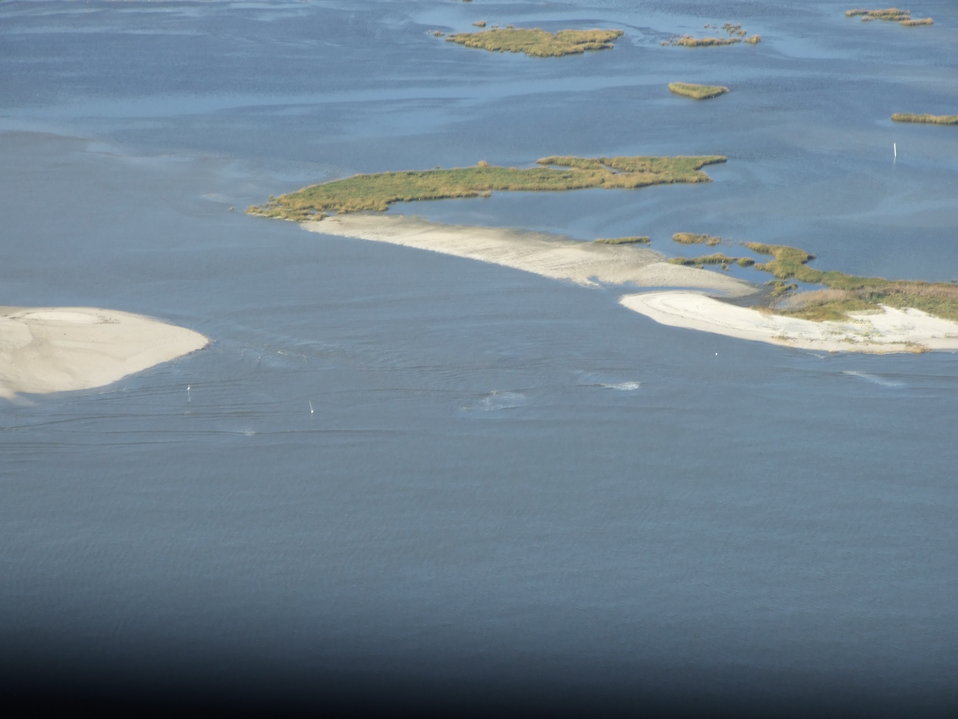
Flooding at Prime Hook National Wildlife Refuge (DE)

Prime Hook National Wildlife Refuge experienced extensive flooding during Hurricane Sandy. This photo is an expanding breach north of Prime Hook Beach, looking west from the Delaware Bay.